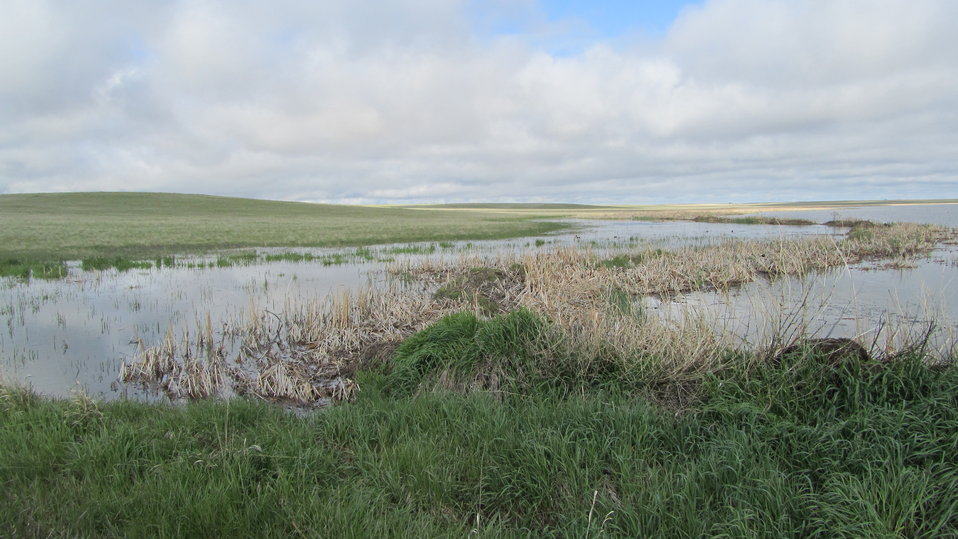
Back View of Unit I

Benton Lake NWR is one of more than 520 national wildlife refuges administered by the U.S. Fish and Wildlife Service that were established to protect, enhance, and restore the Nation's wildlife heritage. Covering 12,383 acres (19 square miles), the Refuge is located on the western edge of the northern Great Plains, 50 miles east of the Rocky Mountains and 12 miles north of Great Falls, Montana. Despite its name, Benton Lake is actually a 5,000-acre shallow wetland created by the last continental glacier thousands of years ago.